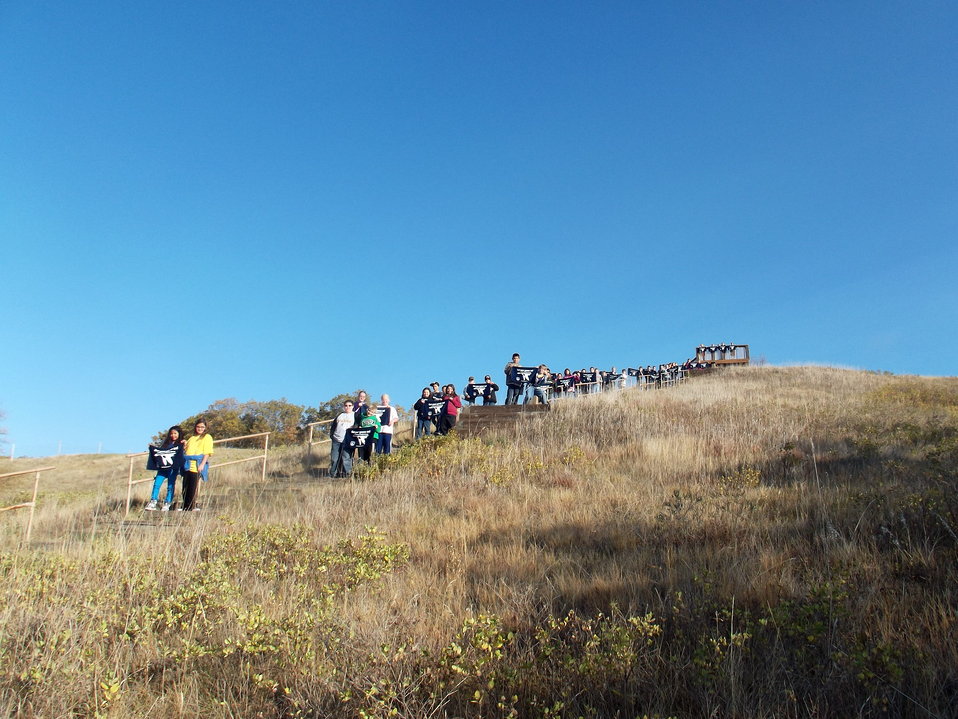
Get Your Goose On!

Photo taken at Sullys Hill National Game Preserve.